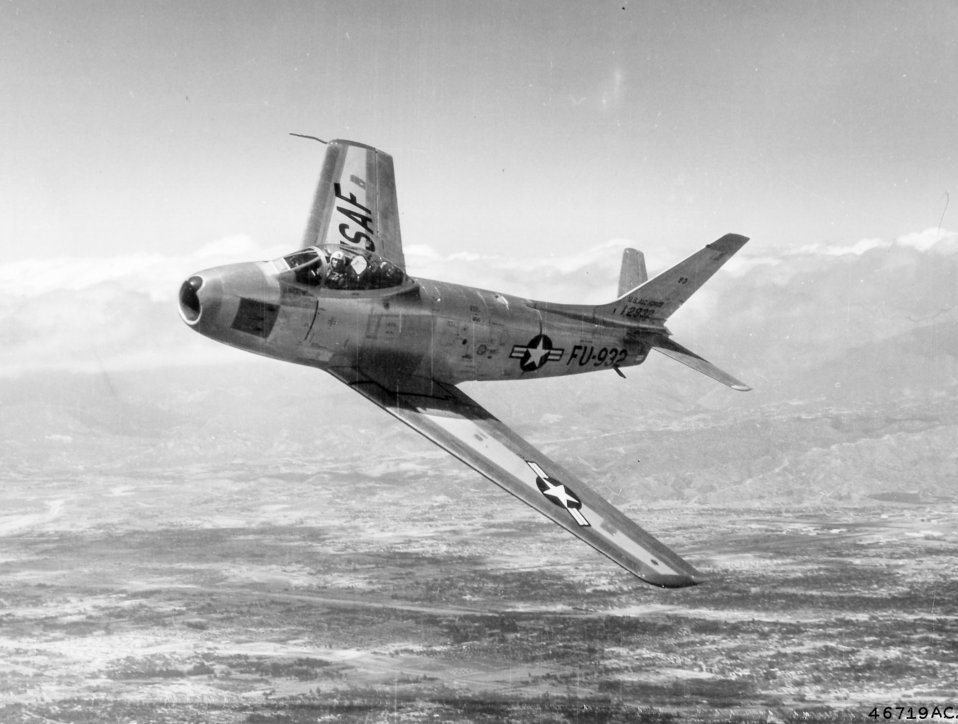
F-86F Sabre

1950's -- North American F-86F Sabre jet, 1953. The F-86F-35-NA had the capability of carrying a nuclear weapon. The 1200-pound Mk 12